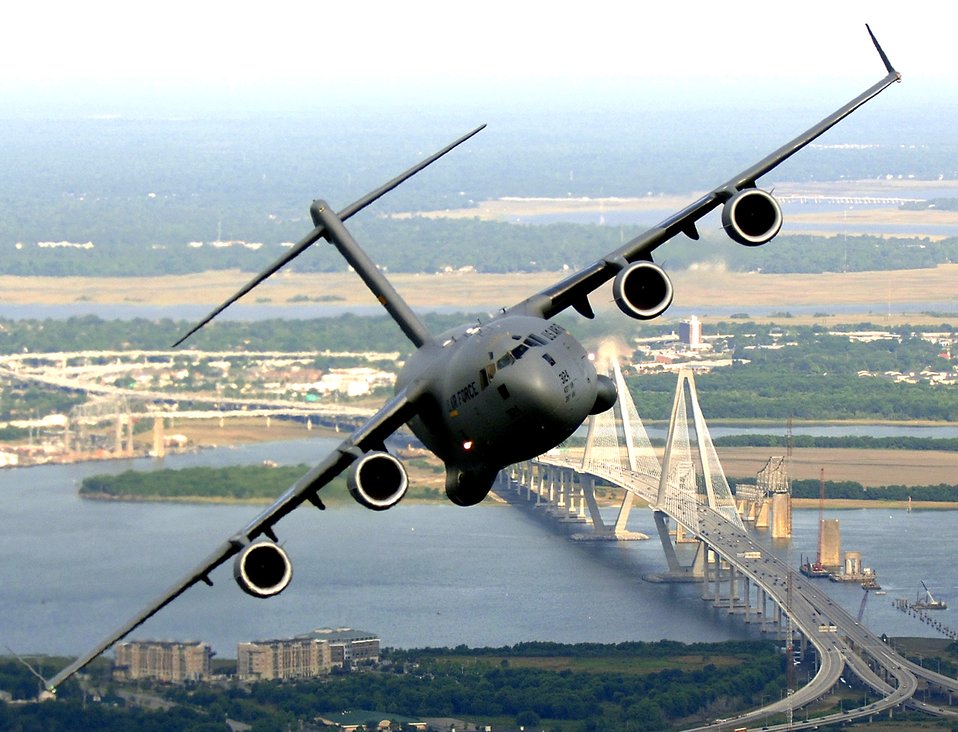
C-17s over Charleston

A C-17 Globemaster III from the 14th Airlift Squadron, Charleston Air Force Base, S.C., banks over the Arthur J. Ravenel Bridge in Charleston, S.C., during a training mission May 16, 2006.